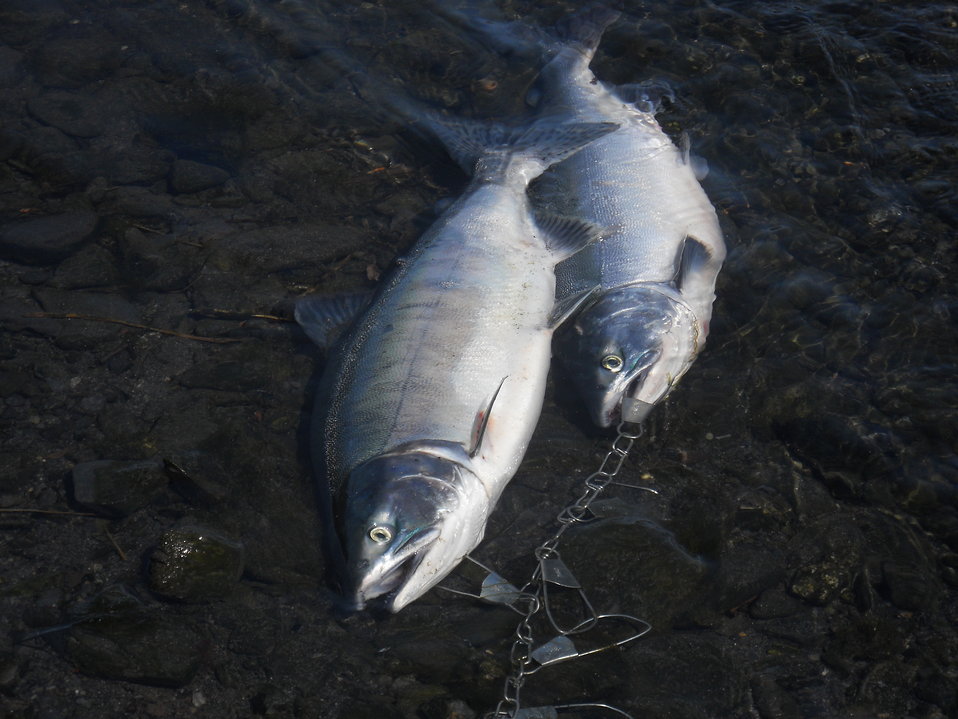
Quite a Catch!

Credit: USFWS
Photo taken by a Salmon Camp participant during a nature photography activity.

Source and Contact: Kodiak National Wildlife Refuge